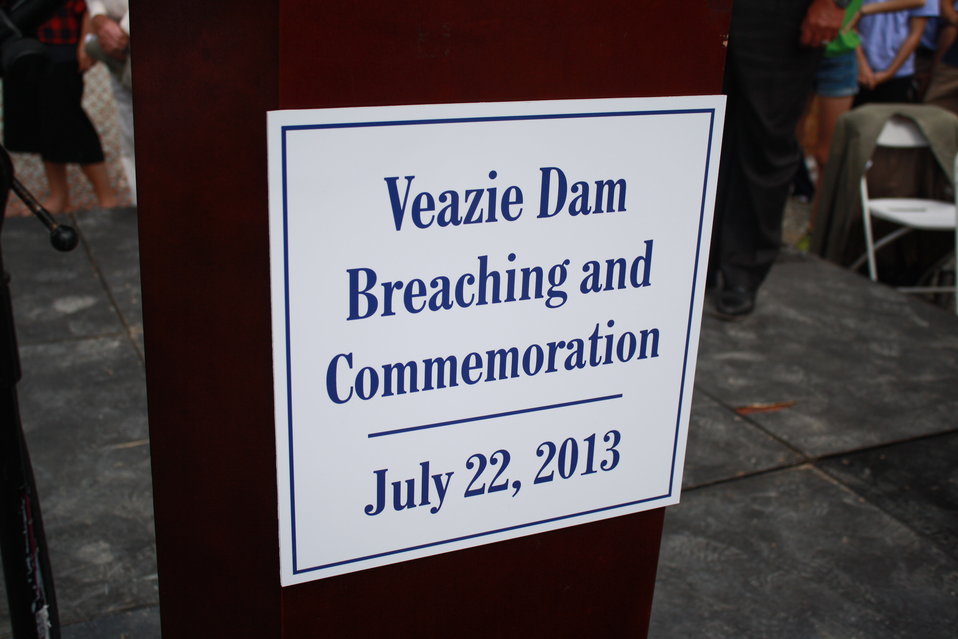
Veazie Dam Removal

Partners and community members gathered on the shore of the Penobscot River in Eddington, Maine, to watch the breaching of the Veazie Dam.